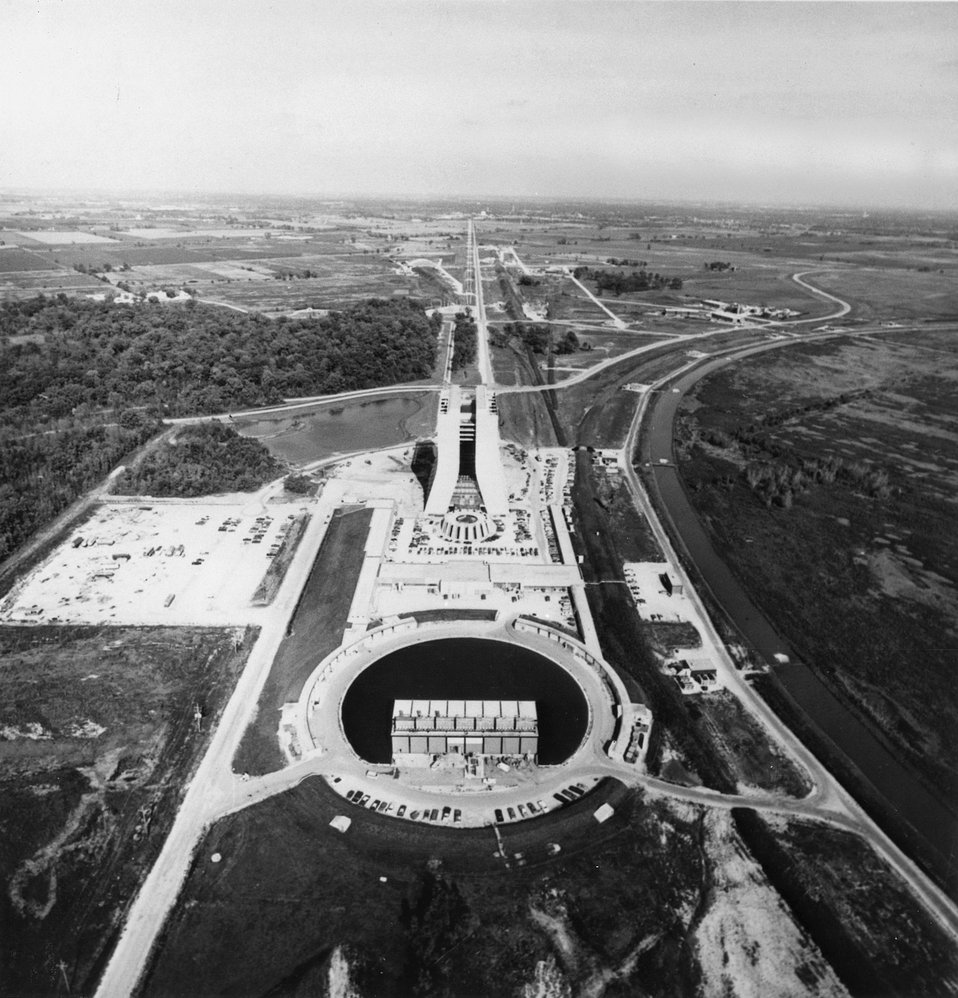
Aerial view of the AEC NAL showing the three external experimantal areas in the background, 16 story Central Lab building and circular auditorium in the middle booster cooling pond and utility building in foreground.
c.1974